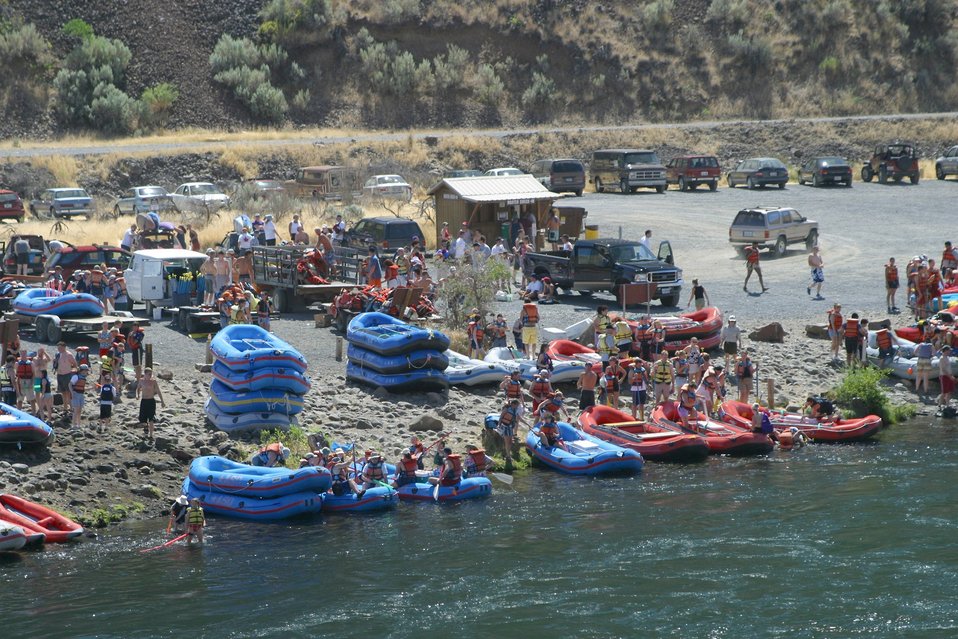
Over 200,000 people a year float the Lower Deshutes River.